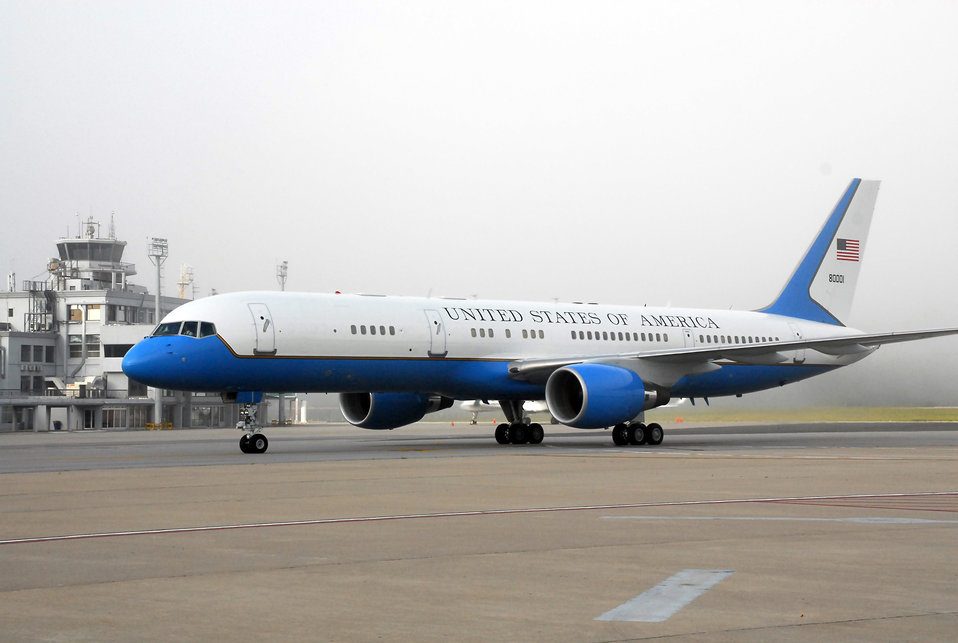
Secretary Clinton Arrives in Montevideo, Uruguay

U.S. Secretary of State Hillary Rodham Clinton's plane is 'wheels down' in Carrasco's International Airport during her arrival in Uruguay March 1, 2010.